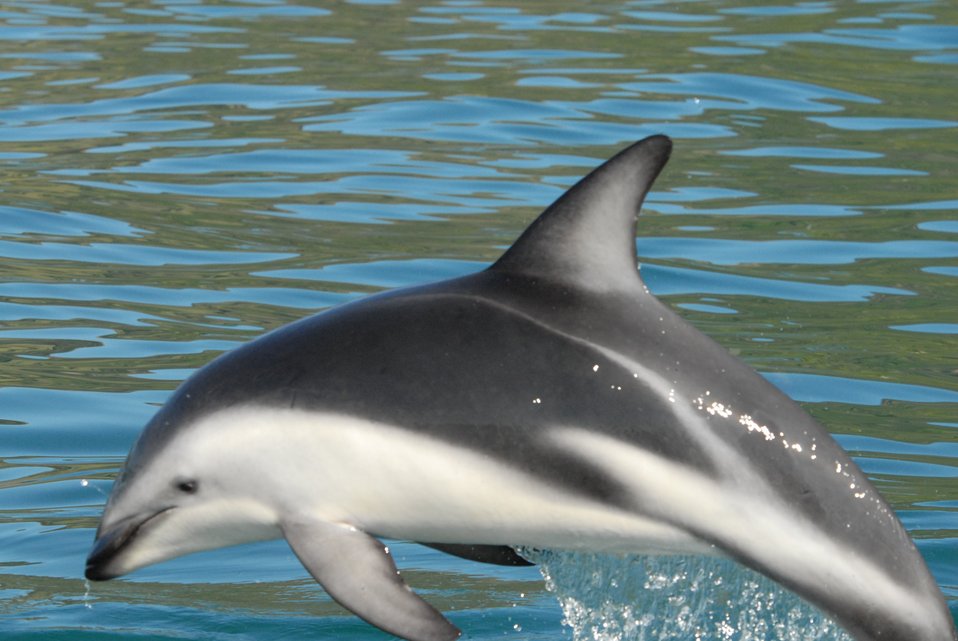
Dusky dolphin (Lagenorhynchus obscurus)